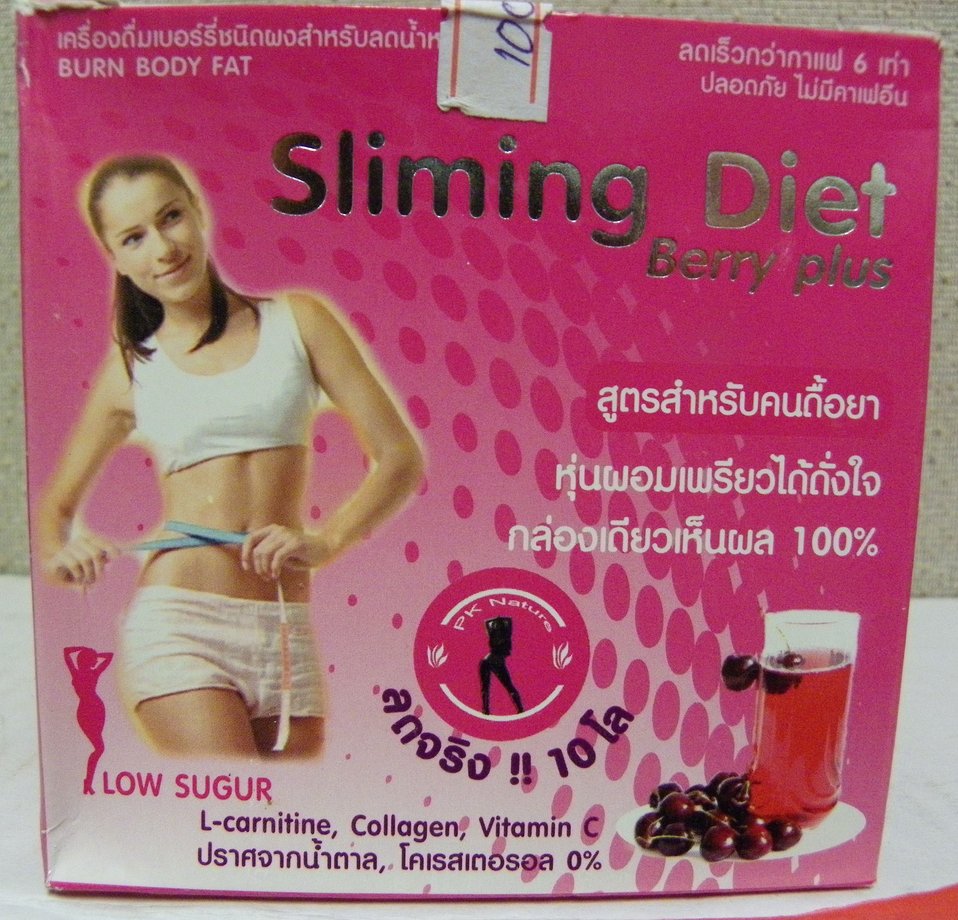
Sliming Diet Berry Plus

December 19, 2013 - The FDA is advising consumers not to purchase or use 'Sliming Diet Berry Plus,' a product promoted and sold for weight loss. The product was found to contain undeclared sibutramine. For more information, go to www.fda.gov/Drugs/ResourcesForYou/Consumers/BuyingUsingMe...

And read this Consumer Update: Beware of Fraudulent ‘Dietary Supplements’